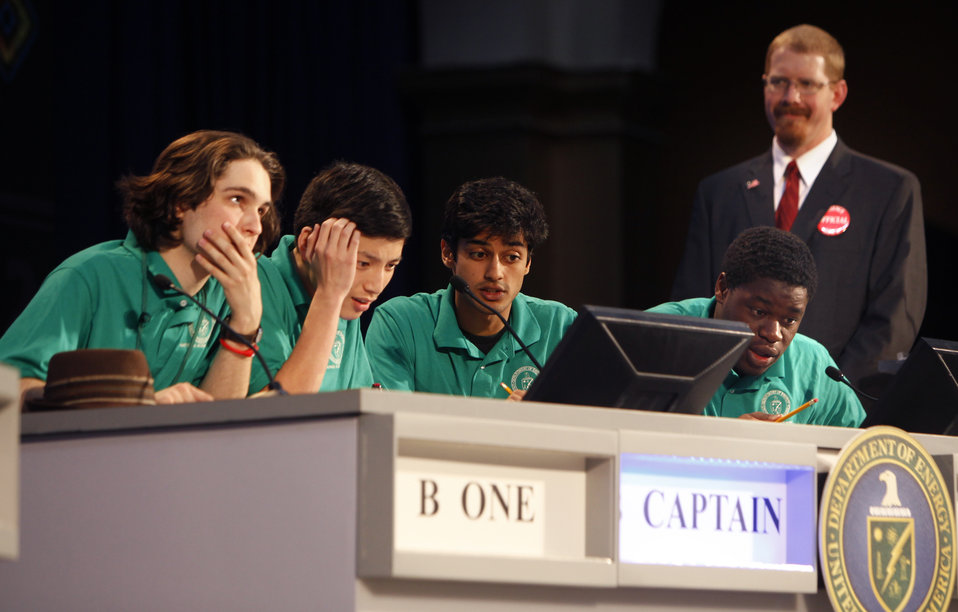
The North Hollywood High School team from Los Angeles, California wins second place at the U.S. Department of Energy National Science Bowl in Washington, DC on April 30, 2012.

DOE created the National Science Bowl in 1991 to encourage students to excel in mathematics and sciences and to pursue careers in these fields. The department supports mathematics and science education to help provide a technically trained and diverse workforce for the nation. More than 2000,000 students have participated in the National Sciences Bowl throughout its history.